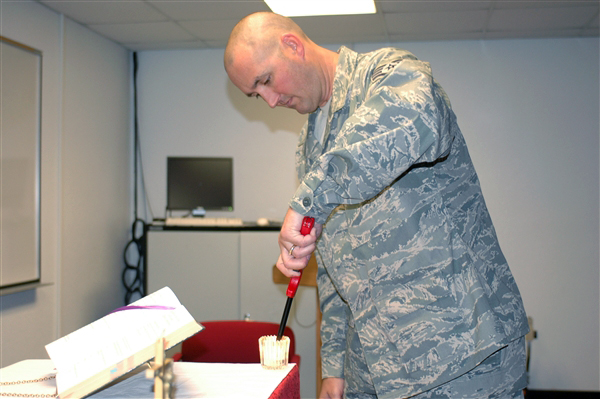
Former pro baseball player

Staff Sgt. Trevor Harvey prepares for Catholic Mass on a drill weekend. Sergeant Harvey is a chaplain's assistant at the Arizona Air National Guard's 162nd Fighter Wing.